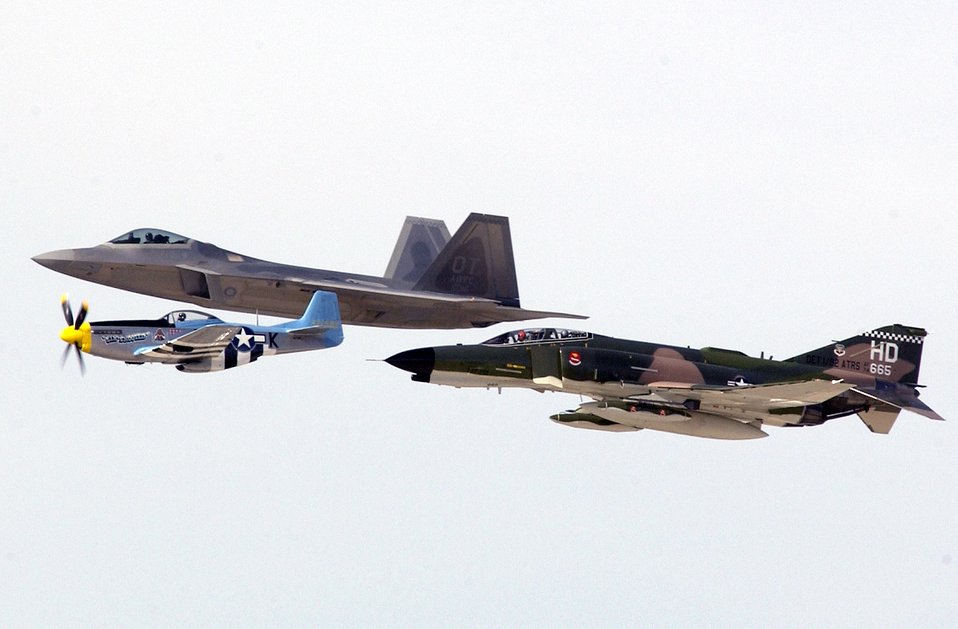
2005 air show Nellis AFB Nevada

NELLIS AIR FORCE, Nev. (AFPN) -- An F/A-22 Raptor, a vintage F-4 Phantom II and a P-51 Mustang fly a heritage fly-over during the Aviation Nation 2005 air show. This year's event, held Nov. 12 and 13, was dedicated to Vietnam War veterans with a special welcome home tribute. It drew more than 150,000 spectators.